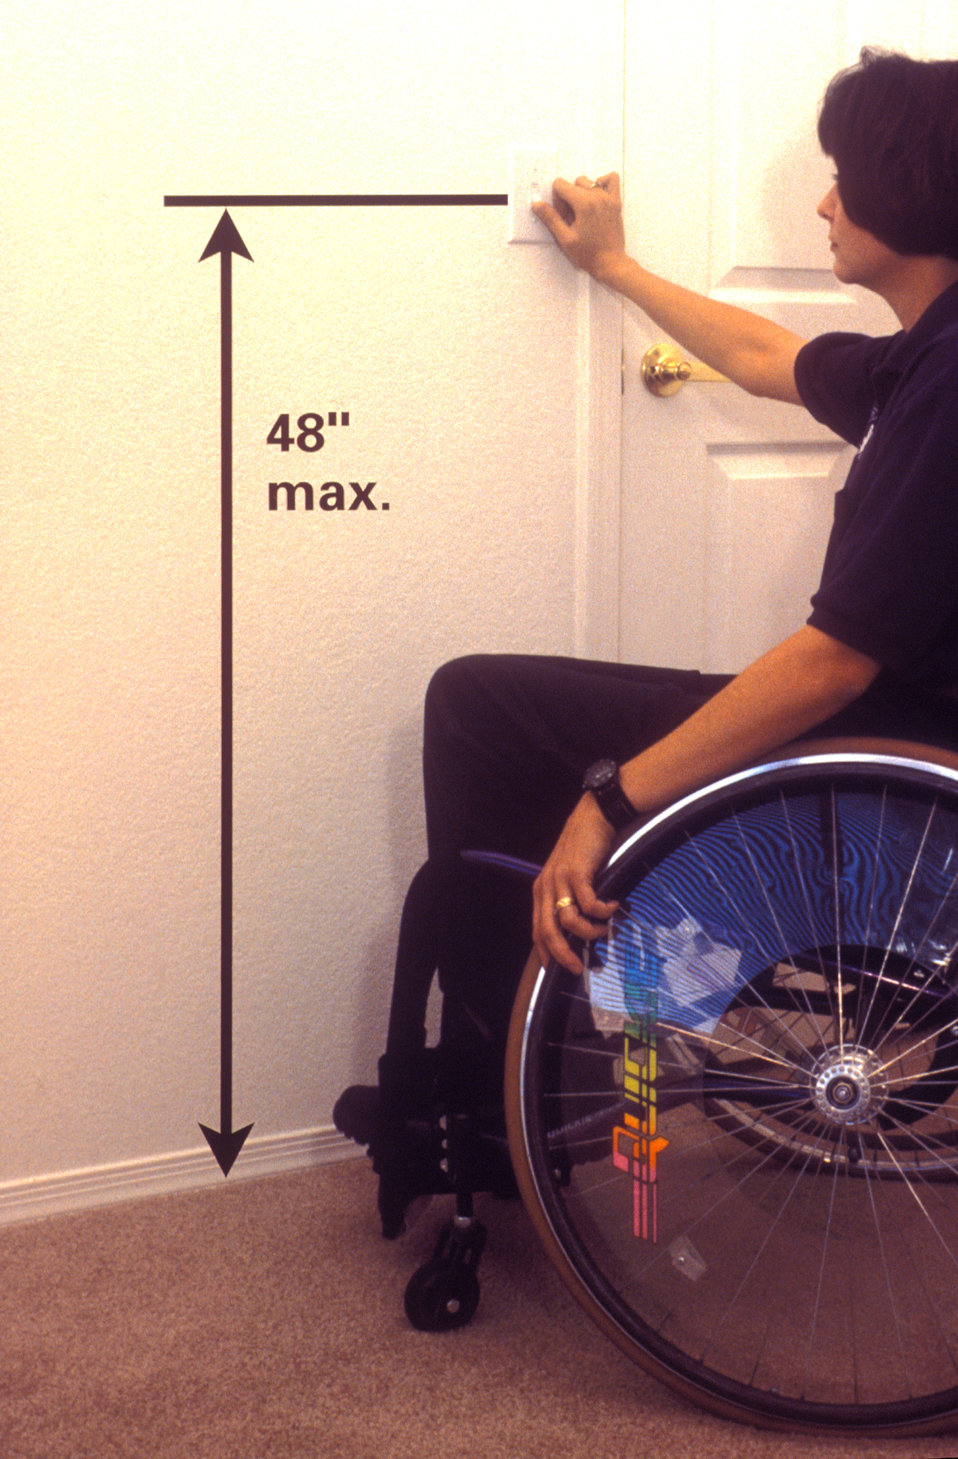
Photographed in 1997, this image depicted a wheelchair-seated woman as she was interacting with a wall-mounted light switch. Crucial to the location of the switch was the height at which it was mounted to the wall, which in order to be accessible to as many different users, must be no more than fourty-eight inches from the floor level. At this height, those seated in a wheelchair, as well as those standing, could easily use the switch without having to maintain an awkward body position.